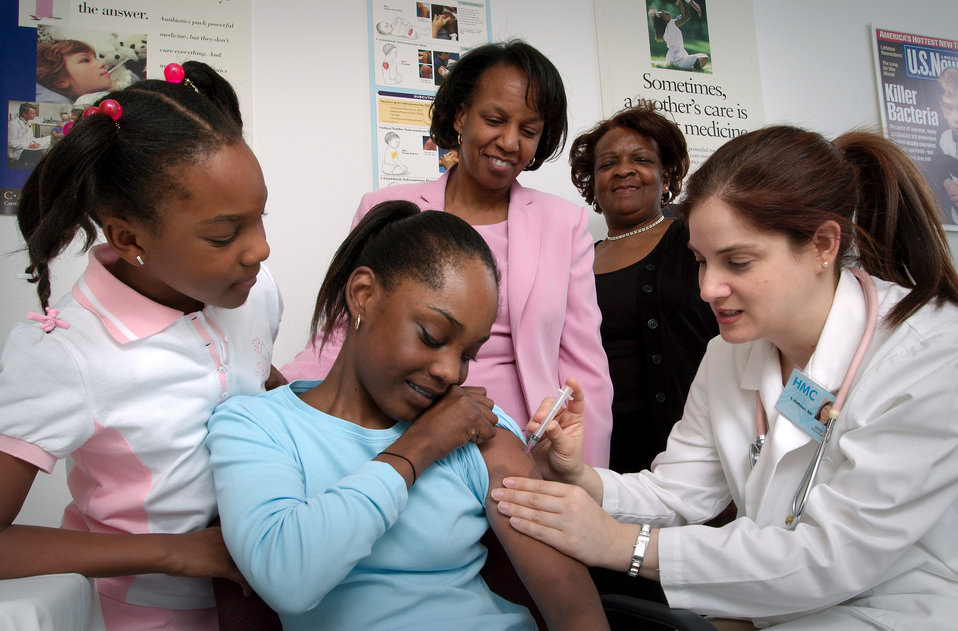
This 2006 photograph showed a nurse in the process of administering an intramuscular vaccination to an adolescent girl whose sister, mother, and grandmother watched from the background. The nurse chose the shoulder muscle of the girl's left arm as the site of injection, which she stabilized using her free hand.